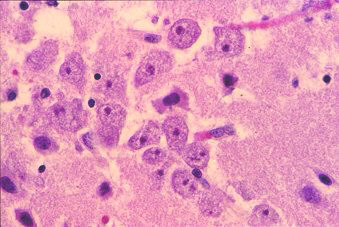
Histopathology of Balamuthia mandrillaris infection, brain